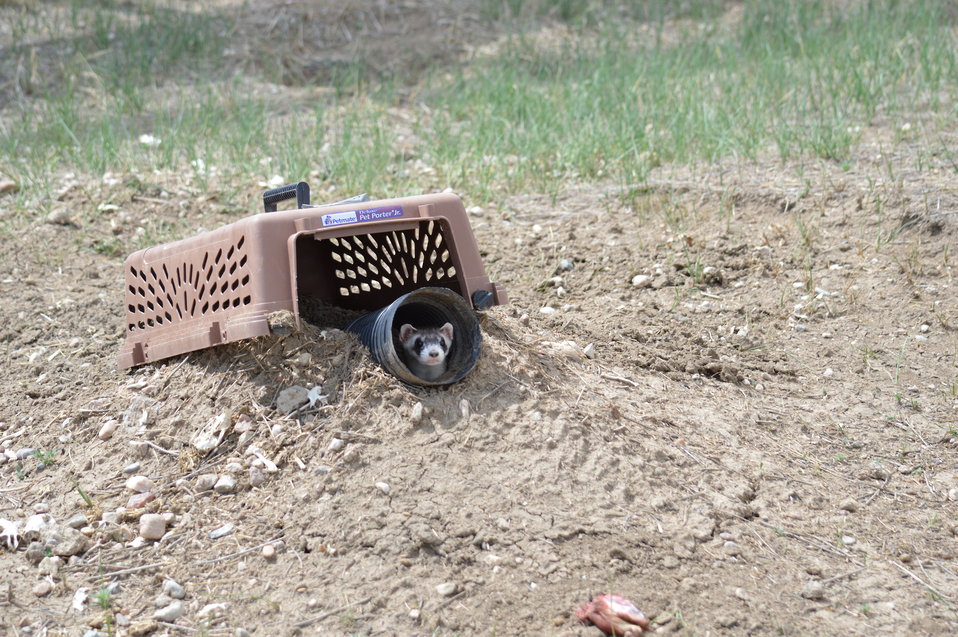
Interns visit the NBFFCC

In the summer of 2012, USFWS Region 6 interns visited the National Black-footed Ferret Conservation Center (NBFFCC) in Colorado to learn how the program reintroduces the endangered Black-footed ferret back into its native habitat.